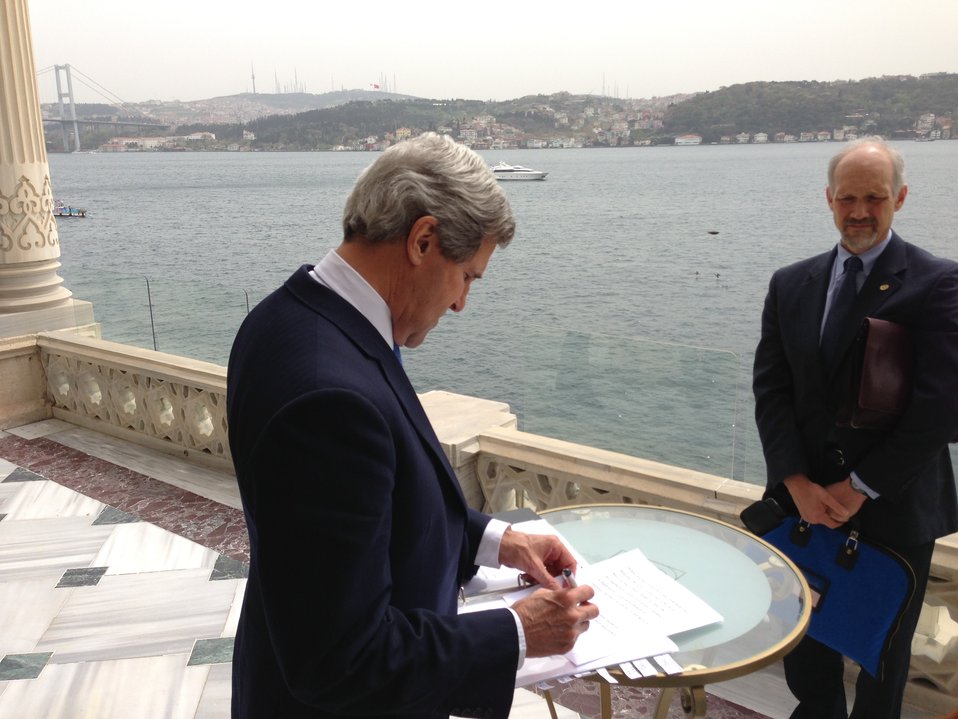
Secretary Kerry and Deputy Chief of Staff Danvers Prepare for Joint Press Availability in Istanbul, Turkey

U.S. Secretary of State John Kerry prepares with his Deputy Chief of Staff, William C. Danvers, for a joint press availability in Istanbul, Turkey, April 7, 2013.